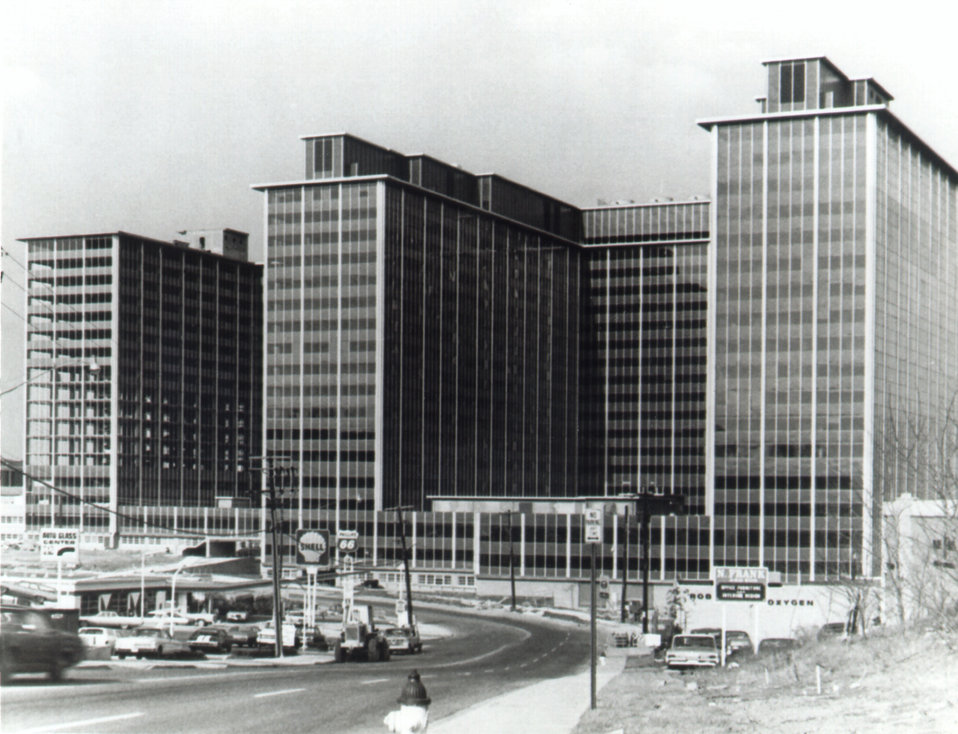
This is one of the National Institute for Occupational Safety and Health (NIOSH) Buildings.